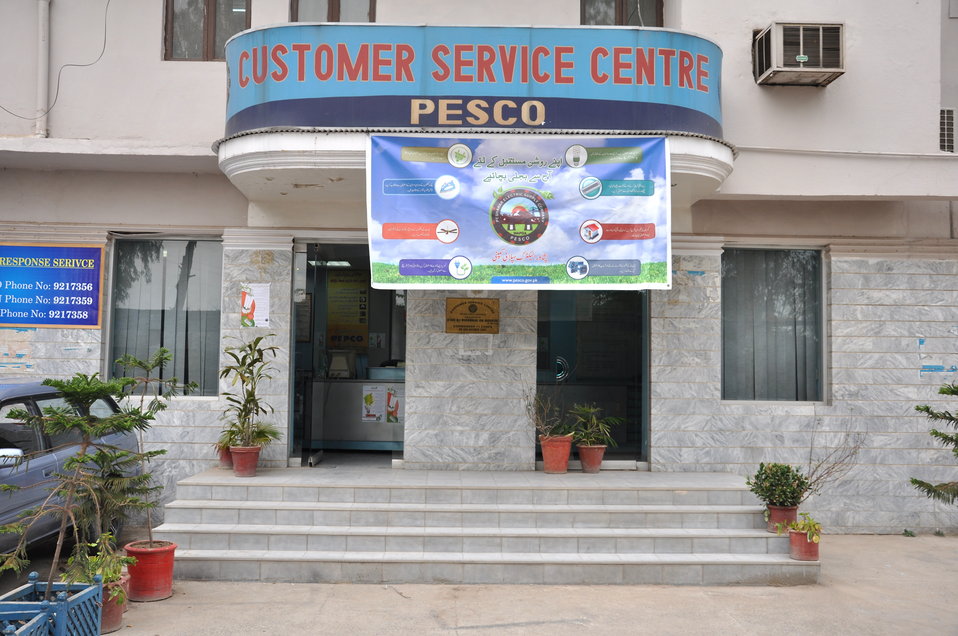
USAID helps power distribution companies to reach out consumers

The USAID Power Distribution Program is facilitating PESCO’s PR department in reaching out to consumers, through the provision of consumer outreach material. This material better assists PESCO in informing consumers about energy conservation, electricity theft and energy efficiency. PESCO is utilizing this material in its own conservation campaigns which will effectively contribute in PR capacity building and in promoting a softer image of the company.